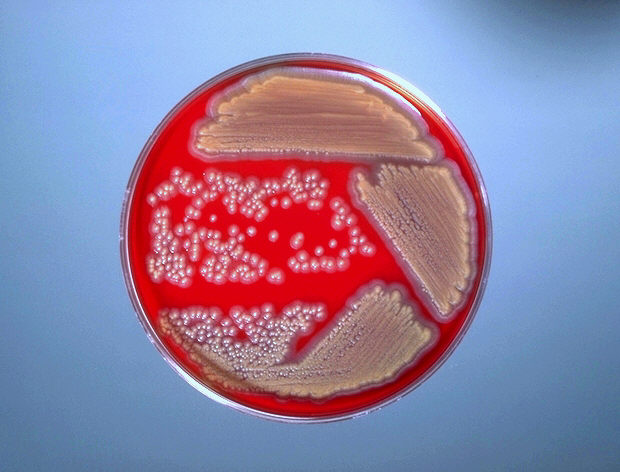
Blood agar plate culture of Flavobacterium odoratum.